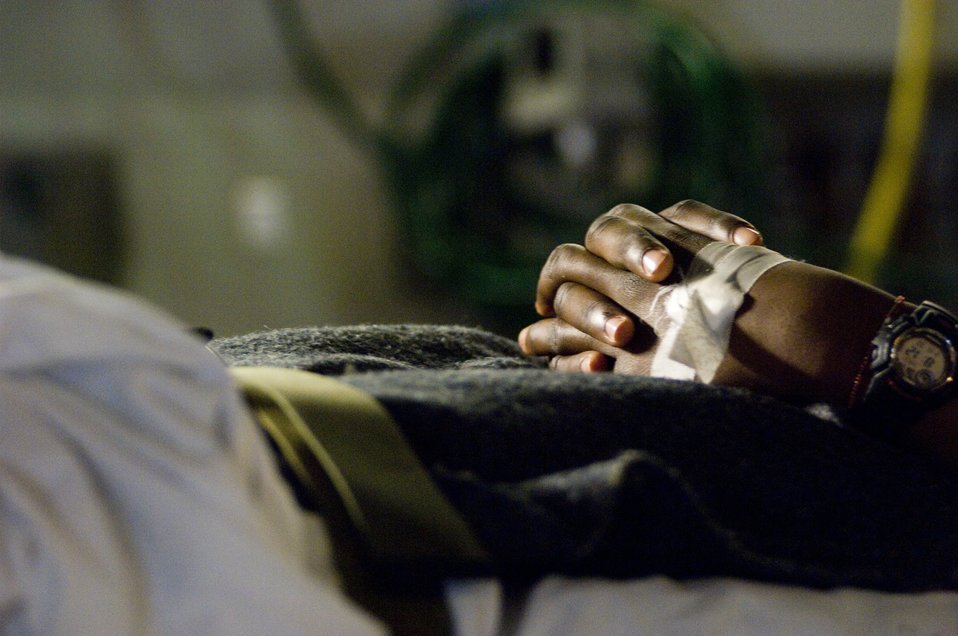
Medical teams provide priceless gift

A patient waits patiently as he is transported on a C-17 Globemaster III Feb. 14 from Balad Air Base, Iraq, to Landstuhl, Germany, where he will receive further care for his wounds.